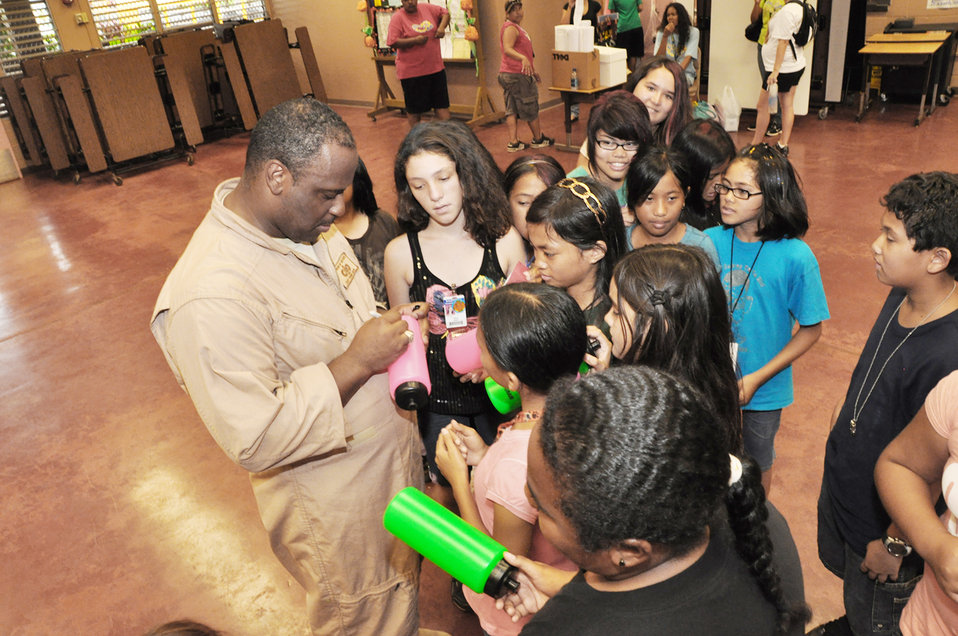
Band of the Pacific-Hawaii participates in Red Ribbon Week

Tech. Sgt. Terry Grace signs autographs for the students of Kaleiopuu elementary School Oct. 22, 2009, in Waipahu, Hawaii. The Band of the Pacific-Hawaii peformed as part of Red Ribbon Week that is aimed at reinforcing children's decisions to stay away from drugs and make positive decisions in life. Sergeant Grace is a band bass guitarist.